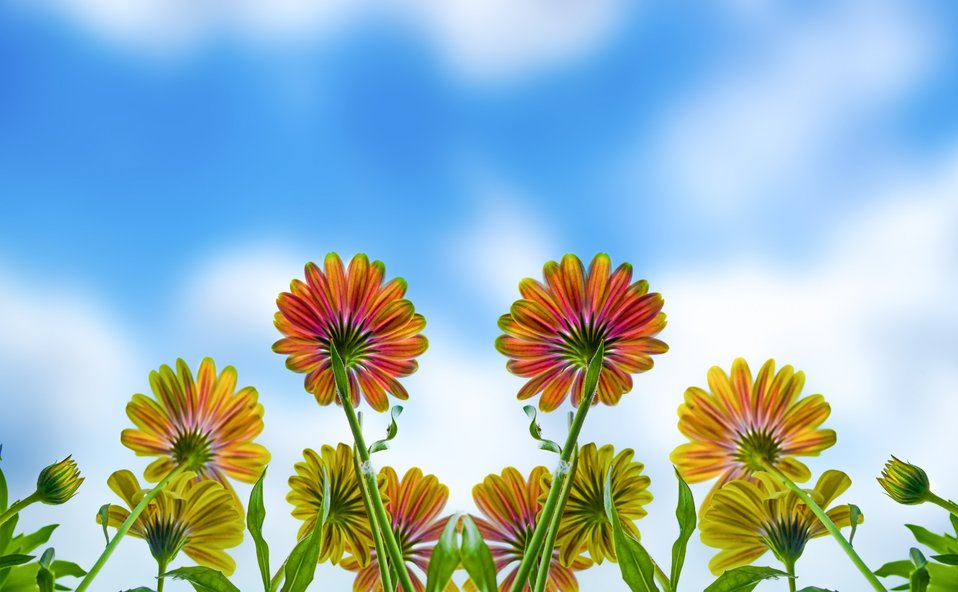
Flowers - background.